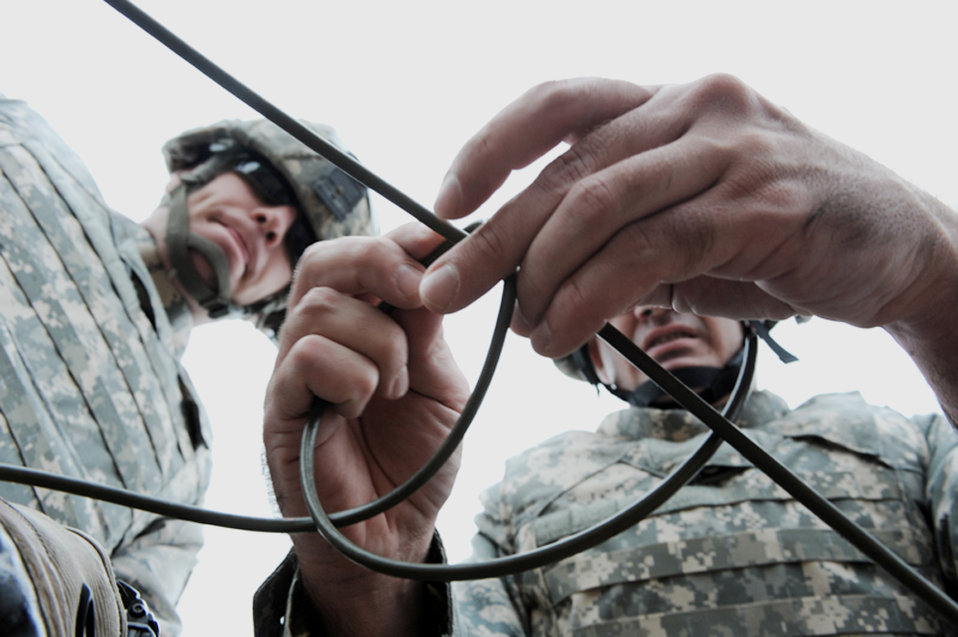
EOD team charge an explosion

Staff Sgt. Patrick Heltne (left), observes while Staff Sgt. Darryl Wilcken is demonstrates the proper technique to wrap a detonation line March 30, 2010, at Ellsworth Air Force Base, S.D. Sergeants Heltne and Wilcken are explosive ordnance disposal journeymen with the 28th Civil Engineer Squadron.